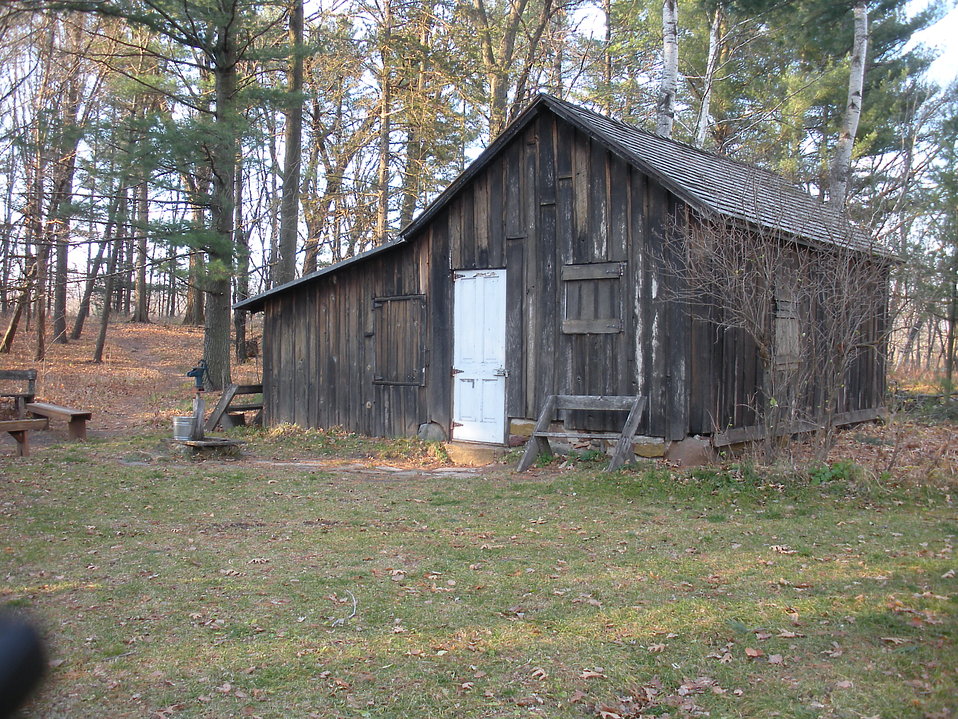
Shack Shot 2

The Shack, a re-built chicken coop along the Wisconsin River where the Leopold family stayed during weekend retreat. (via www.aldoleopold.org/)